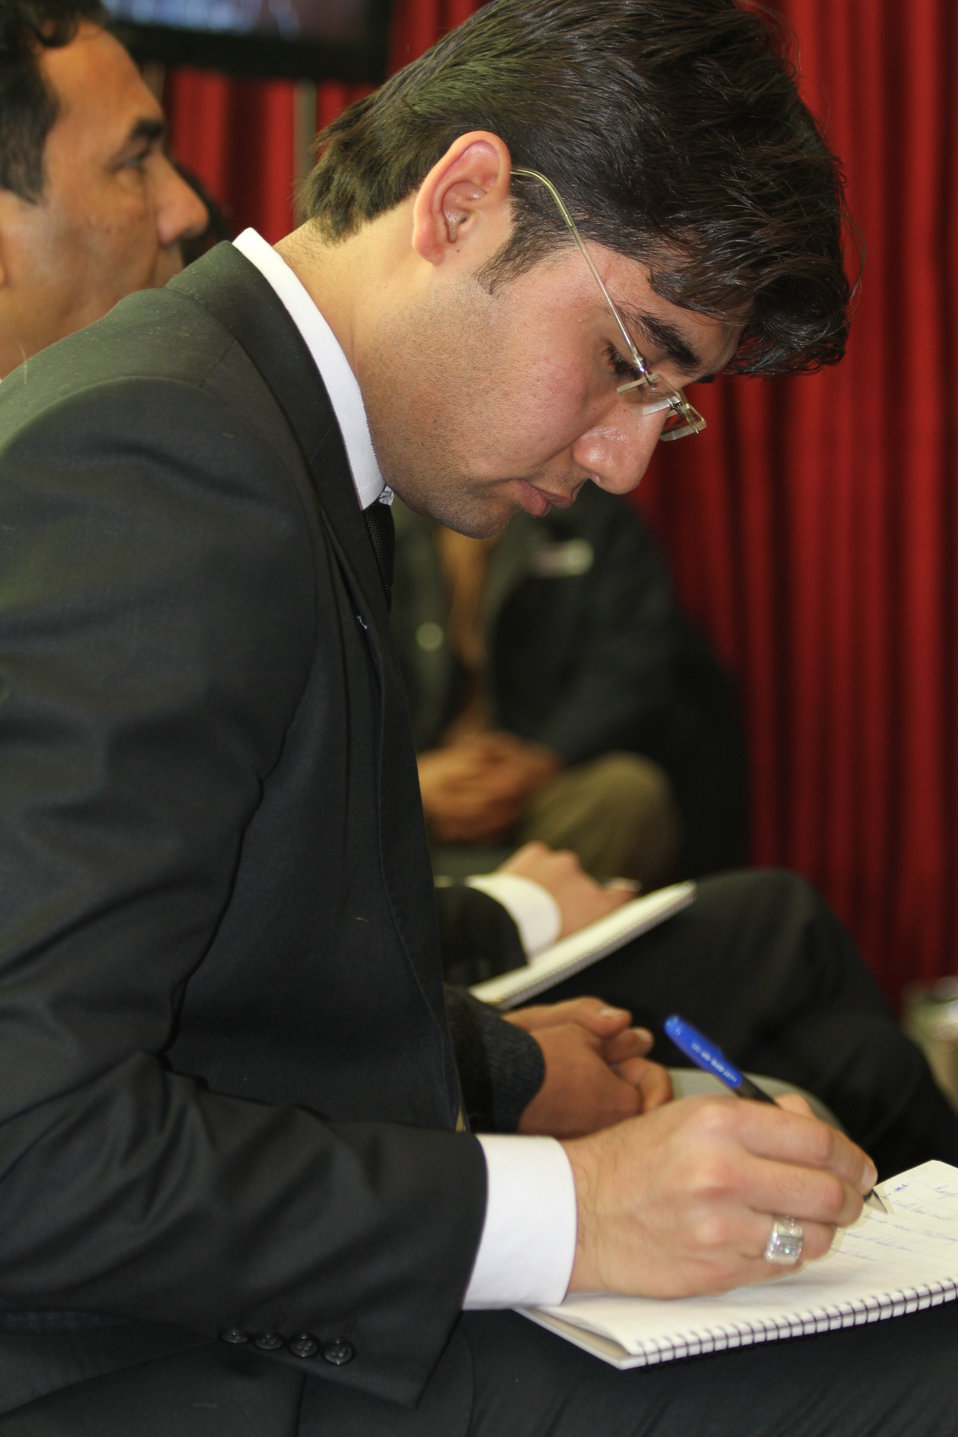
Notes

Balkh student takes notes during Jessup Moot Court, January 11, 2012